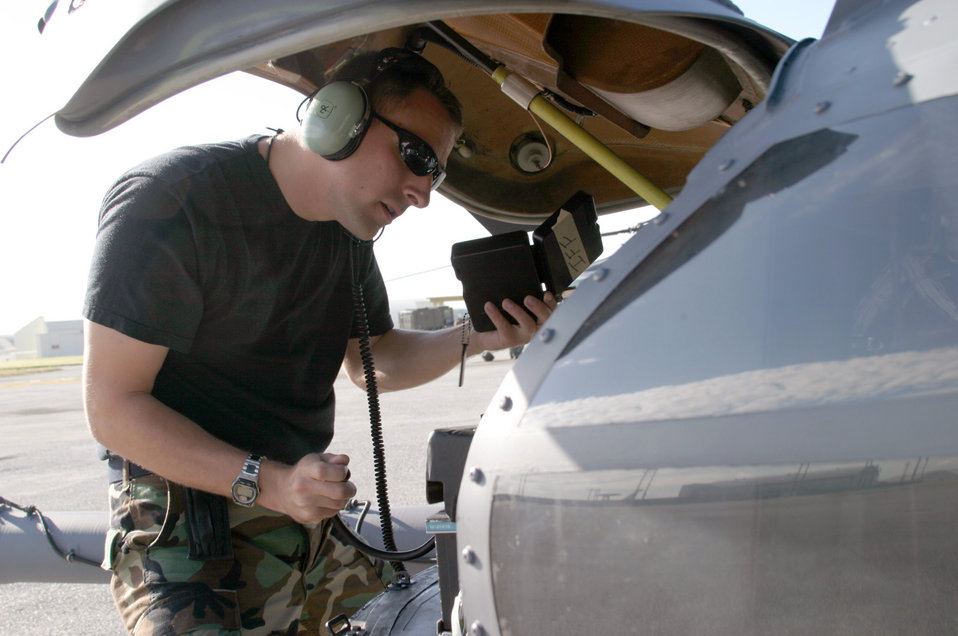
Kadena Airmen deploy to Philippines

KADENA AIR BASE, Japan -- Staff Sgt. Joseph Cziko, from the 718th Aircraft Maintenance Squadron here, helps fix communications on a 33rd Rescue Squadron HH-60 Pave Hawk helicopter before the aircraft's departure Dec. 9 for a mission to the storm-devastated Philippines. Three HH-60s from the 33rd RQS, two MC-130 Combat Shadows from the 353rd Special Operations Group and a 909th Air Refueling Squadron KC-135 Stratotanker launched from Kadena to provide humanitarian assistance to nearly 170,000 people displaced by Typhoon Nanmadol.